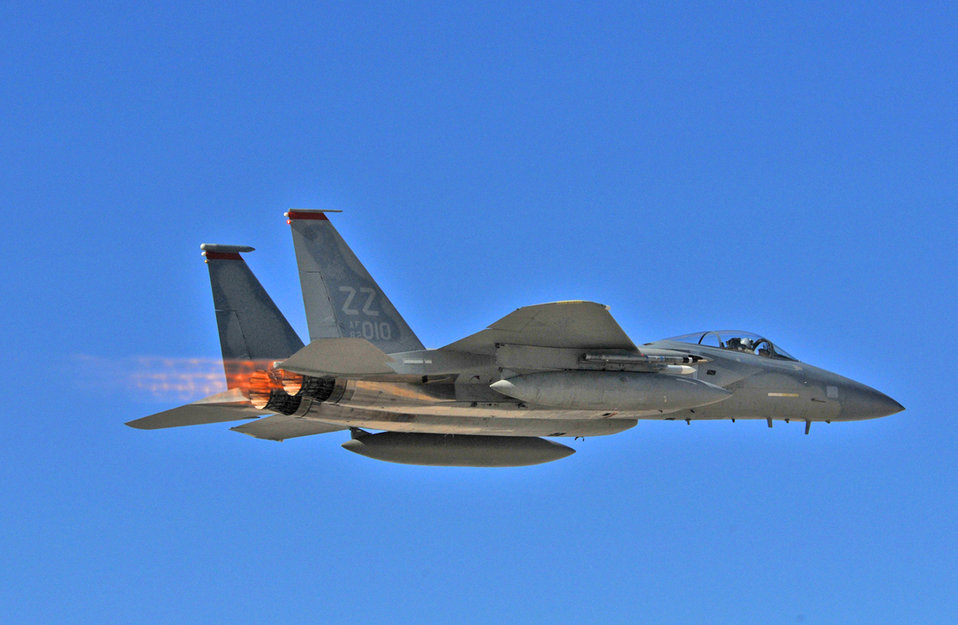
F-15s Over the Super Bowl

F-15 Eagles patrol areas around critical infrastructure and during special events. Fighter aircraft such as these conducted air patrols around Raymond James Stadium in Tampa, Fla., in support of Super Bowl XLIII.